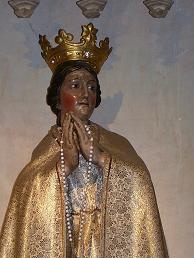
Deutsch: Notre Dame de Sabart - Schwarze Madonna